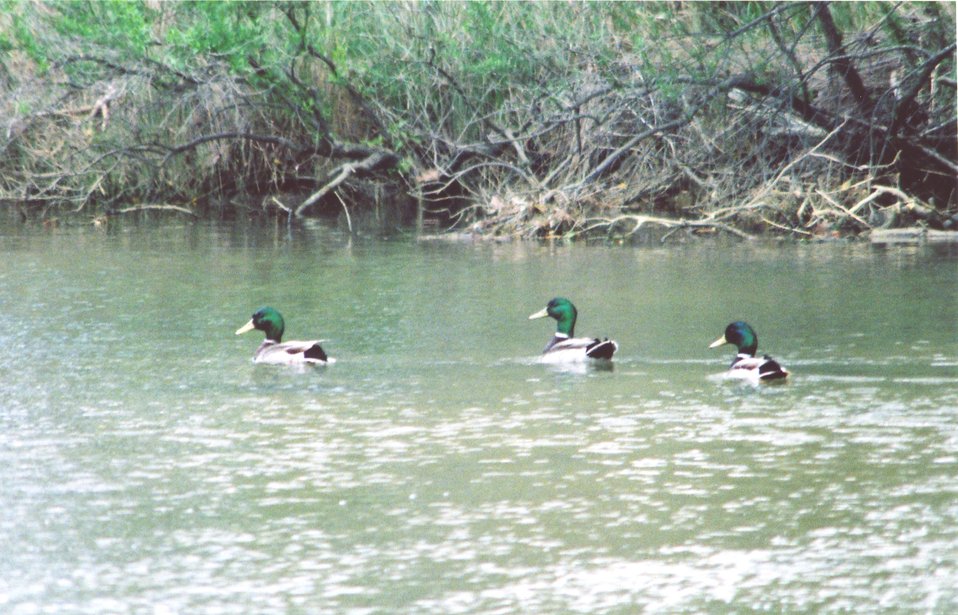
Mallards in a tidal creek off the Patuxent River.